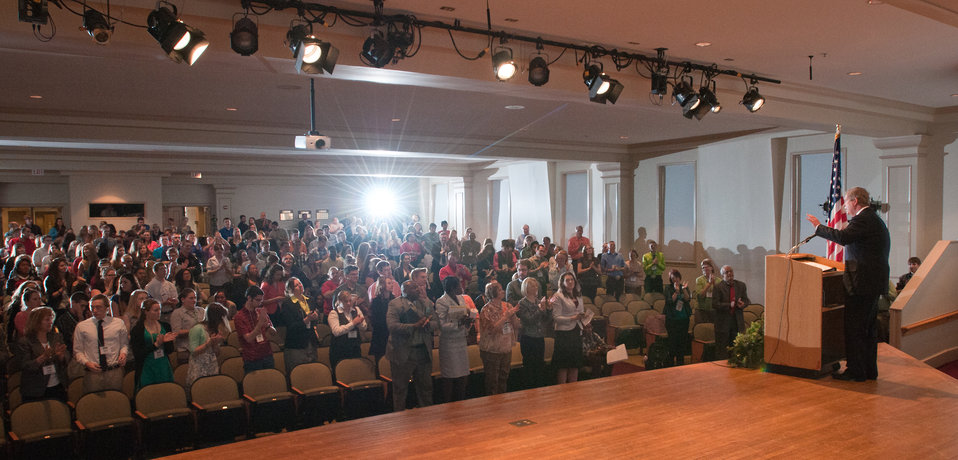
U.S. Department of Agriculture (USDA) Secretary Tom Vilsack recieves a standing ovation after he delivers the keynote remarks to more than 300 youth leaders from states and territories across the country attending the 2013 National 4-H Conference, on Monday, April 8, 2013 in Chevy Chase, MD. Also speaking at the event is Agriculture Departmental Management Office of Advocacy and Outreach Director Carolyn Parker and National Institute of Food and Agriculture Director Dr. Sonny Ramaswamy.